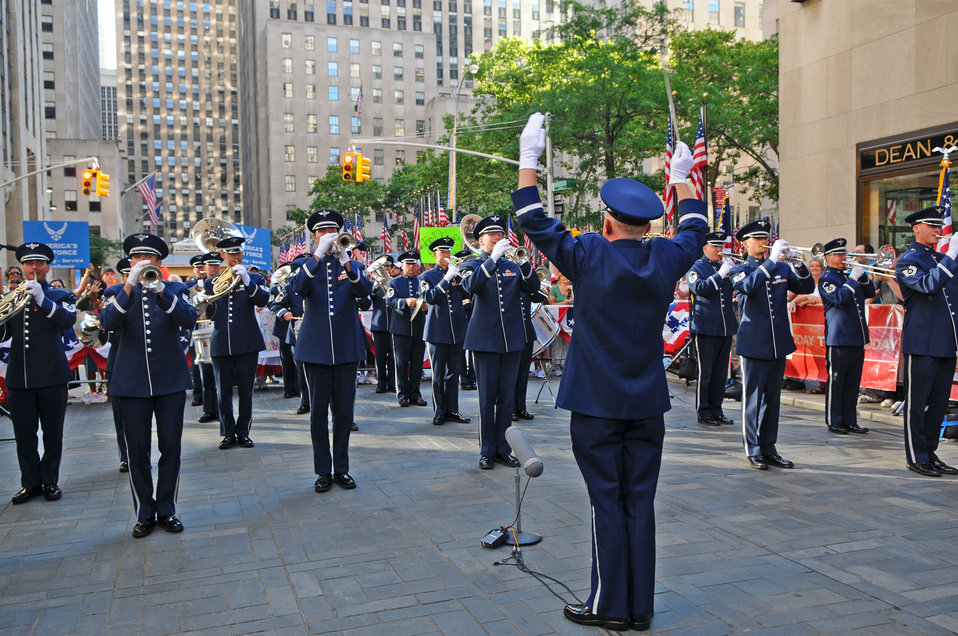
Band performs on 'Today' show

The Air Force Band's Ceremonial Brass group performs during a live broadcast on the